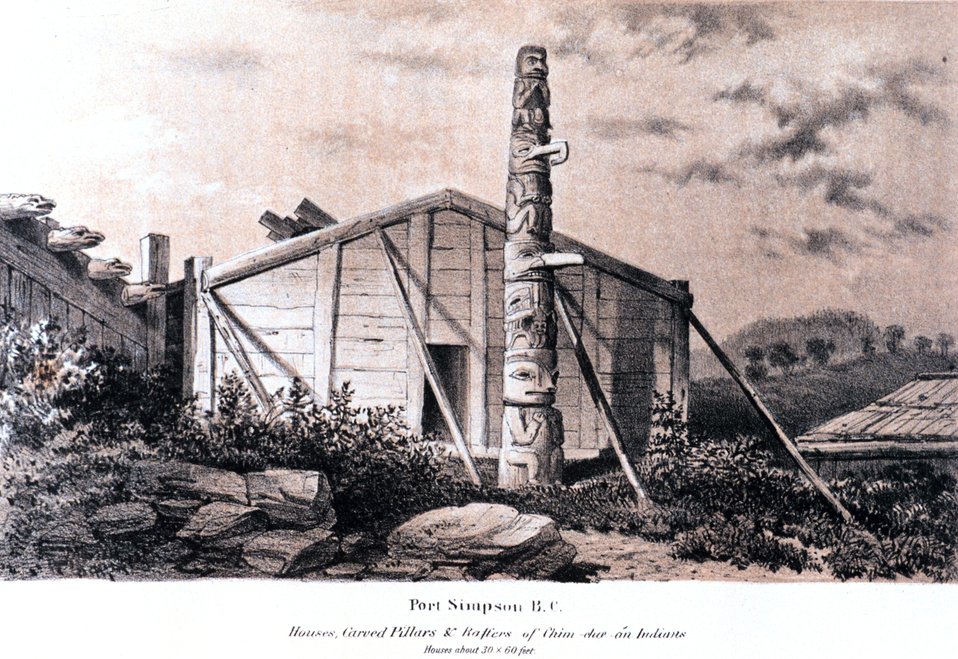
Native dwelling and totem pole at Port Simpson, British Columbia. In: 'Coast Pilot of Alaska, (First Part,) ....' by George Davidson, 1869. P.18. Library Call Number VK943 .N3 1st 1869.